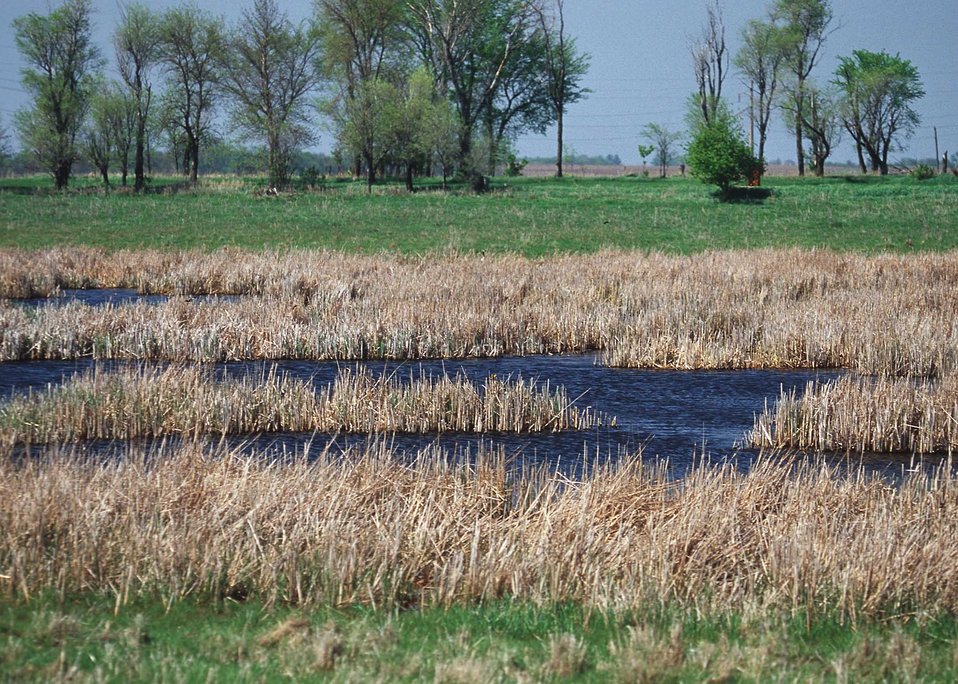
Wetlands recharge groundwater, store floodwaters, provide a filter for sediment and chemicals as well as provide wildlife habitat.